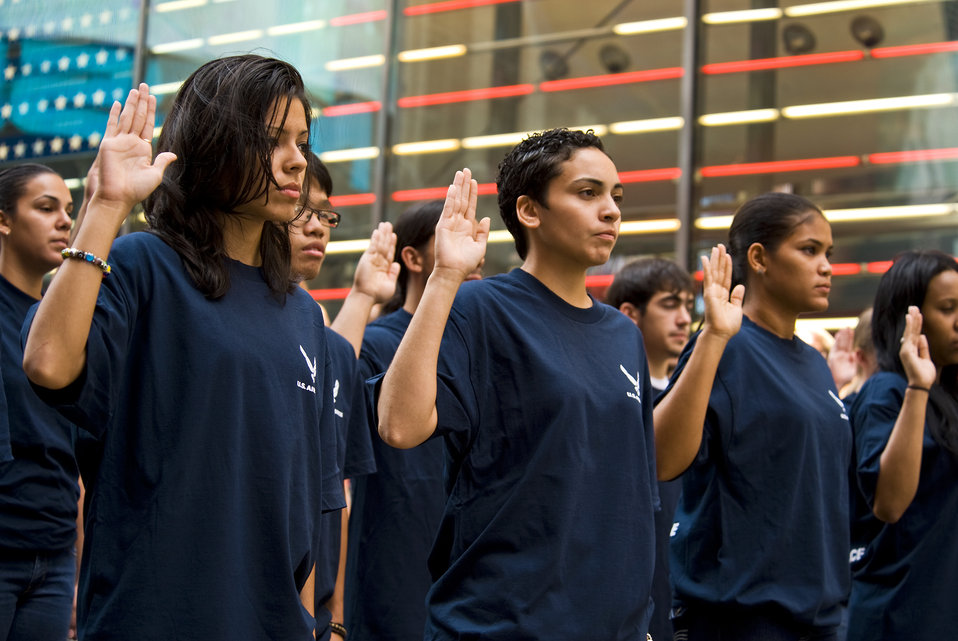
Air Force Week New York

Newly sworn-in recruits are acknowledged by the public for their commitment to serve in the Air Force during Air Force Week New York Aug. 26, 2010, in New York's Times Square. The week serves as the premier platform to share the Air Force story with fellow citizens, and will include community visits and talks by Air Force officials, flight demonstrations, and displays providing an up close and personal look at the men and women of the Air Force serving worldwide in defense of freedom.